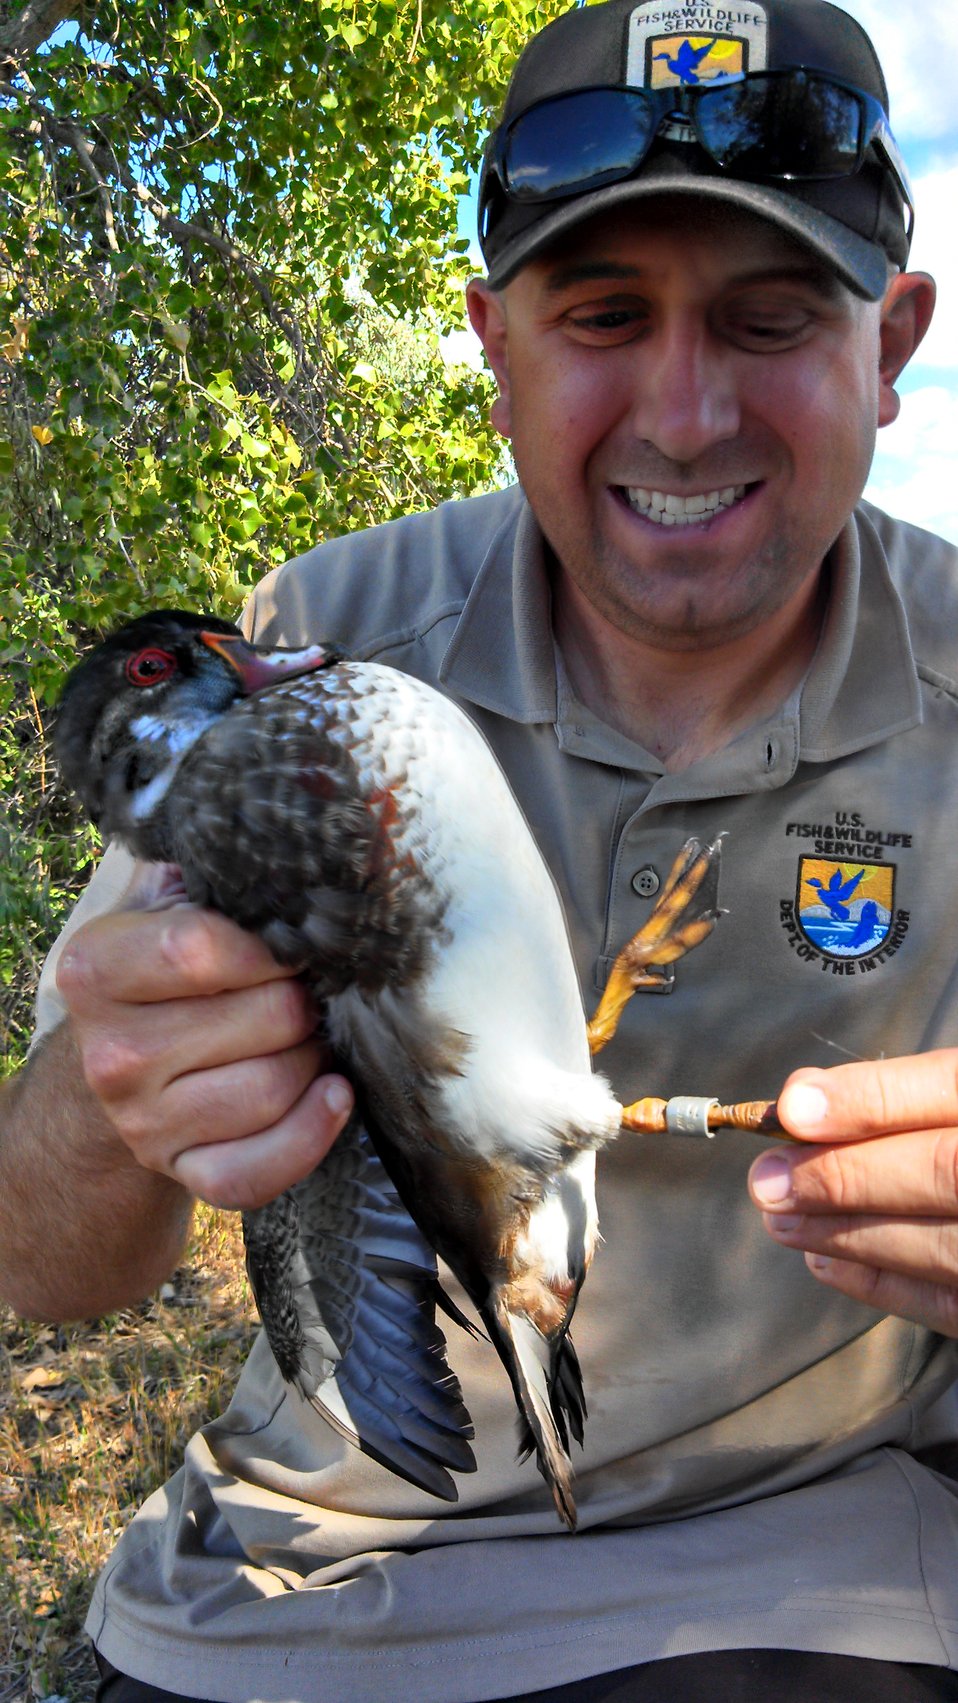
Wood Duck Recapture

A recapturd male wood duck previously banded in Canada.